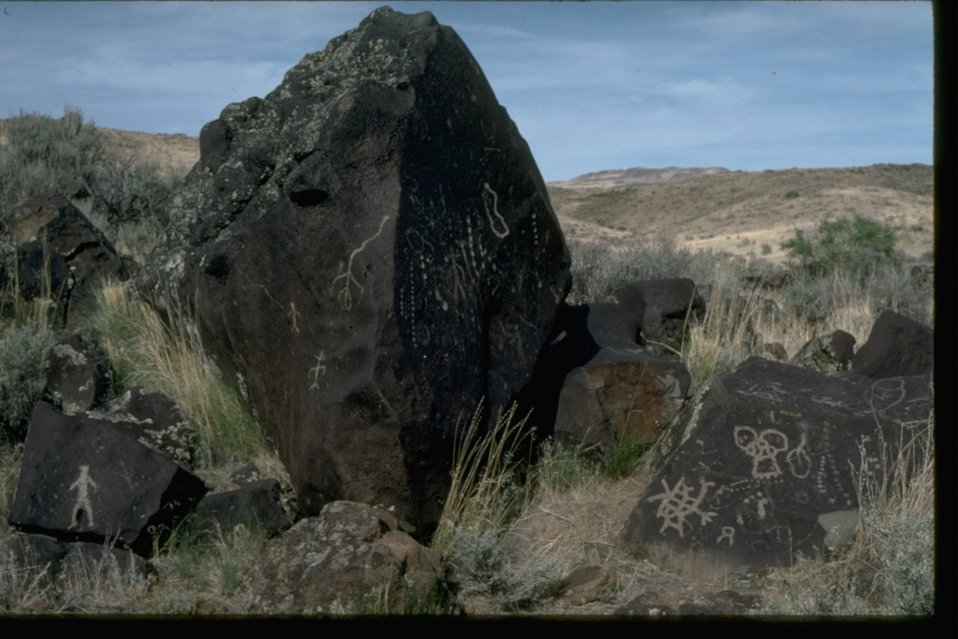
Rock Art. OR 3-59